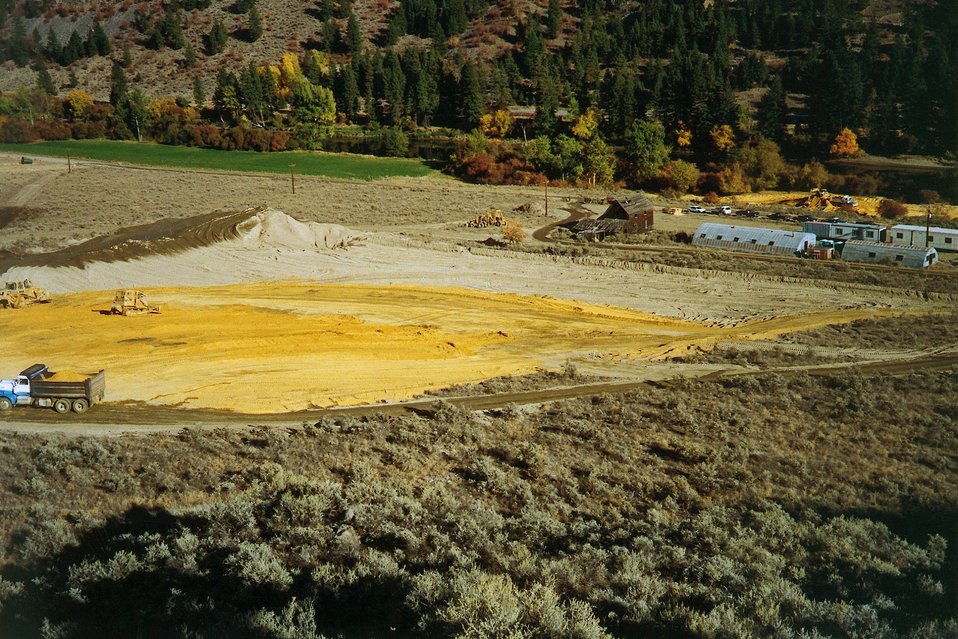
AML. Kaaba-Texas Mine Repository Area, Tailings.